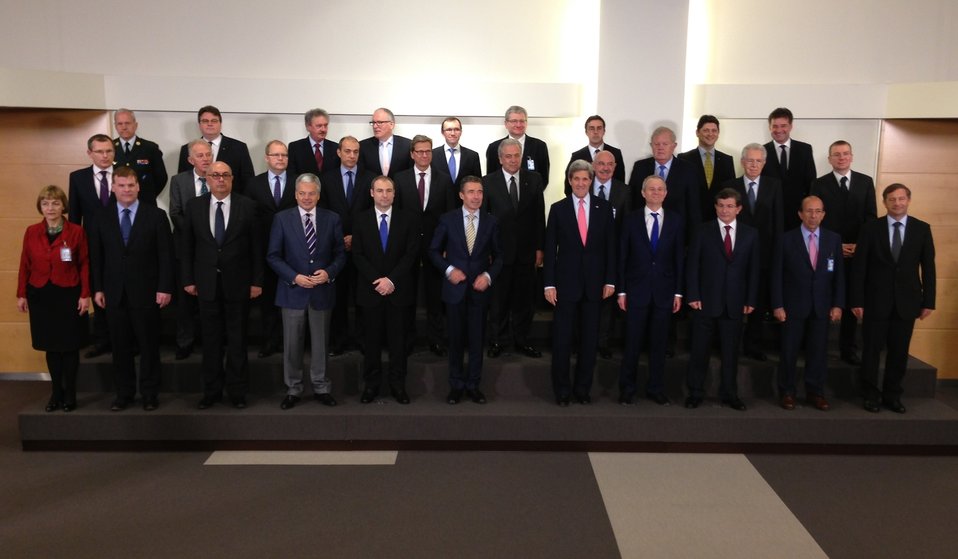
Secretary Kerry Poses With NATO Foreign Ministerial Counterparts

U.S. Secretary of State John Kerry poses with his foreign ministerial counterparts during a break in a NATO summit meeting in Brussels, Belgium, on April 23, 2013.